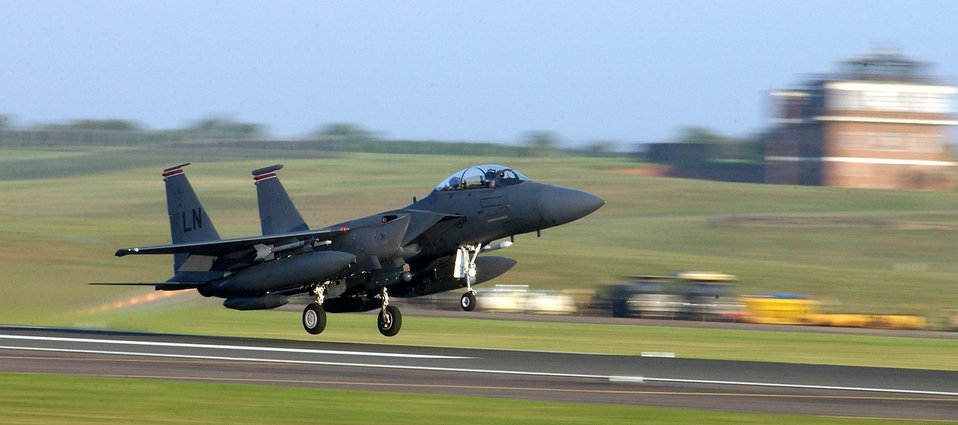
Engage afterburner

ROYAL AIR FORCE LAKENHEATH, England -- A 494th Fighter Squadron F-15E Strike Eagle engages its afterburners during lift off en route to a deployment supporting Operation Iraqi Freedom, July 14.